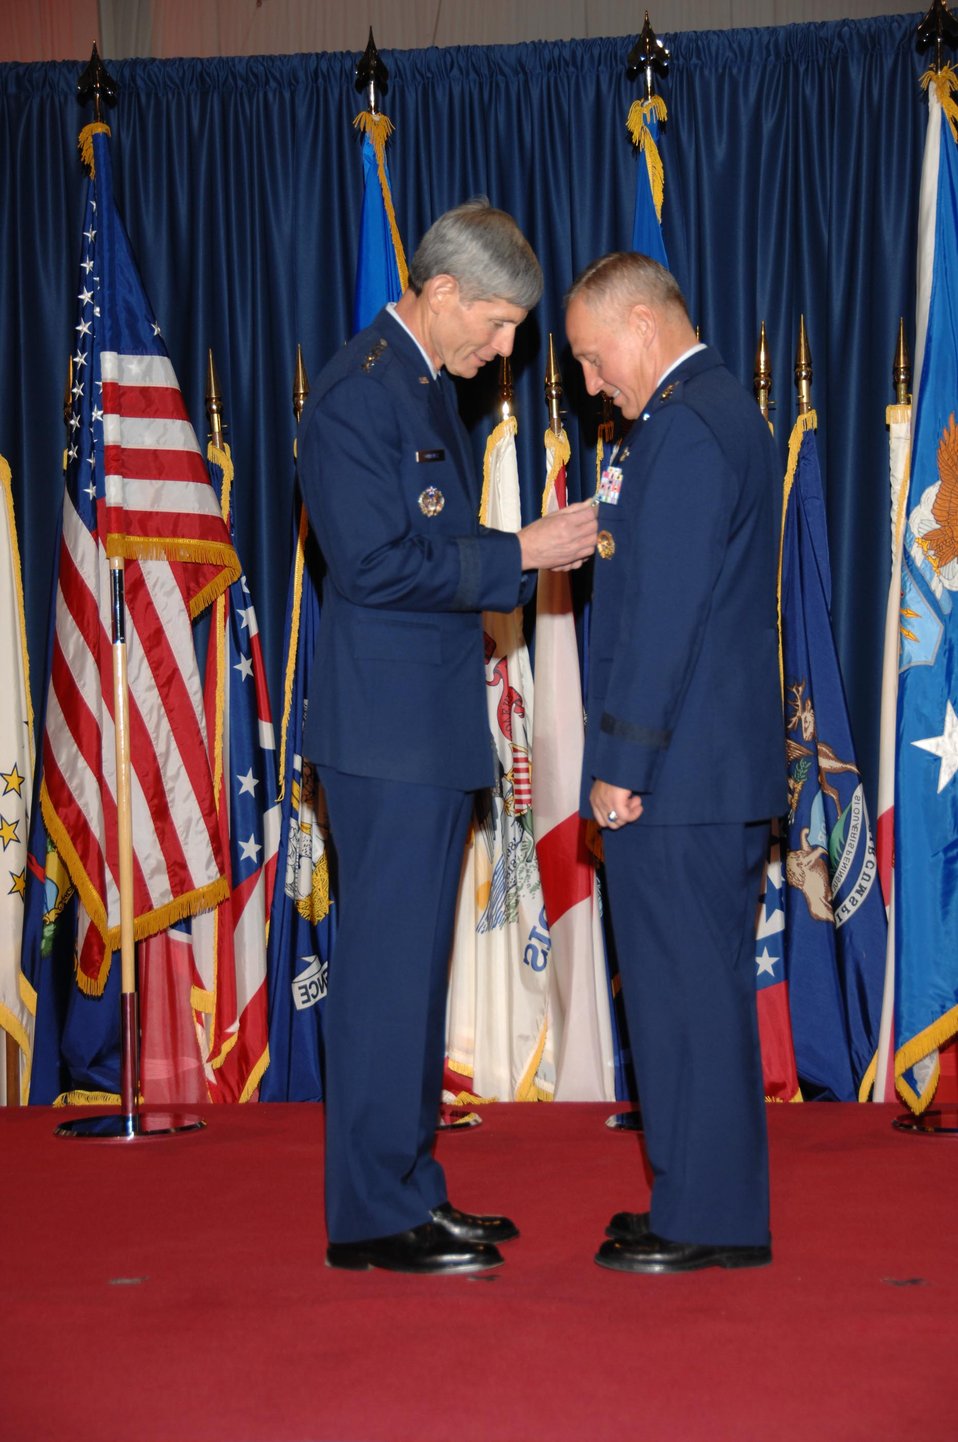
AFMC change of command

Air Force Chief of Staff Gen. Norton Schwartz pins the Distinguished Service Medal on Gen. Bruce Carlson, former commander of Air Force Materiel Command. General Carlson relinquished his position during a change-of-command ceremony Nov. 21 at the National Museum of the United States Air Force at Wright-Patterson Air Force Base, Ohio. With his retirement, General Carlson caps nearly 38 years of service in the Air Force, the last three of which he spent as the AFMC commander.